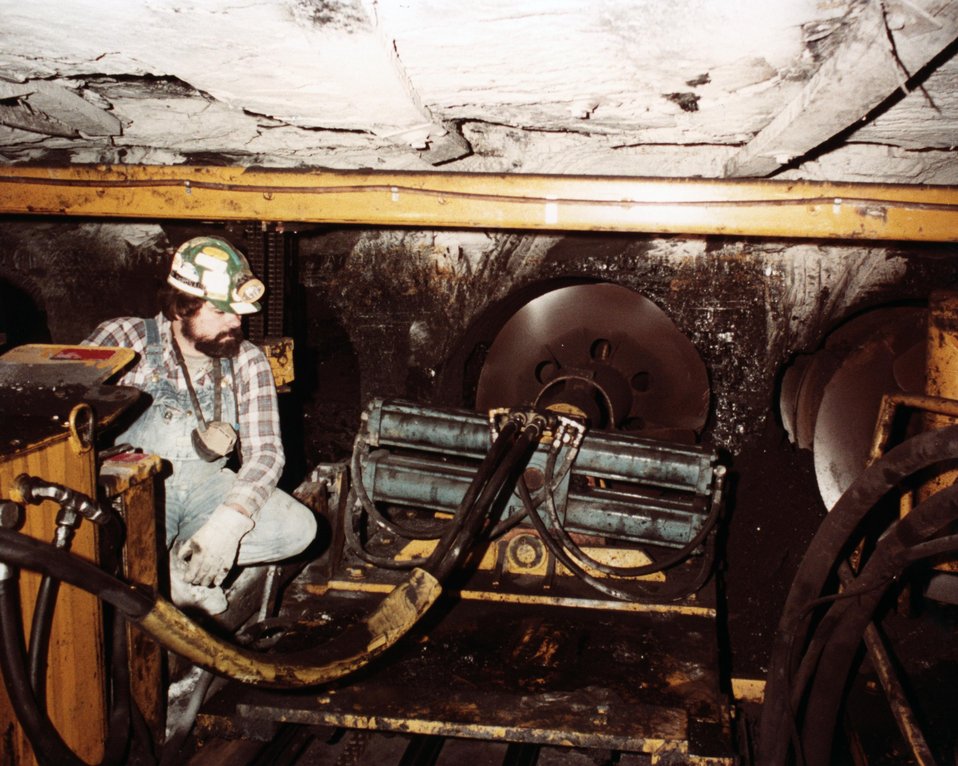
CLOSE-UP OF AUGER BIT, FULLY INSERTED INTO HOLE.

THE BI-DIRECTIONAL AUGER IS BEING DESIGNED TO EXTRACT COAL FROM THE NORMAL SIZE PILLARS LEFT IN ROOM-AND-PILLAR MINING. BY DRILLING INTO TWO PILLARS FROM THE SAME LOCATION, A GREAT DEAL OF THE NONPRODUCTIVE TRAMMING IS ELIMINATED. BY DRILLING MUCH SHORTER BORE HOLES THAN THE PRESENT UNIDIRECTIONAL AUGER, FEWER INTERSECTING HOLES WHICH WANDER INTO ROOF OR BOTTOM ROCK ARE EXPECTED. THE NET RESULT IS A THEORETICAL 40% MORE PRODUCTIVE MACHINE THAN THE UNIDIRECTIONAL AUGER. ALSO, CREW SIZE IS REDUCED BY ONE. PARTLY BECAUSE THE MACHINE IS REMOTELY CONTROLLED AND PARTLY BECAUSE THE AUGER SEGMENTS ARE NOT REMOVED FROM THE MACHINE, THE OPERATION IS MUCH SAFER. DRILLING INTO STANDARD SIZE PILLARS OFFERS A TRUE INCREASE IN RECOVERY.